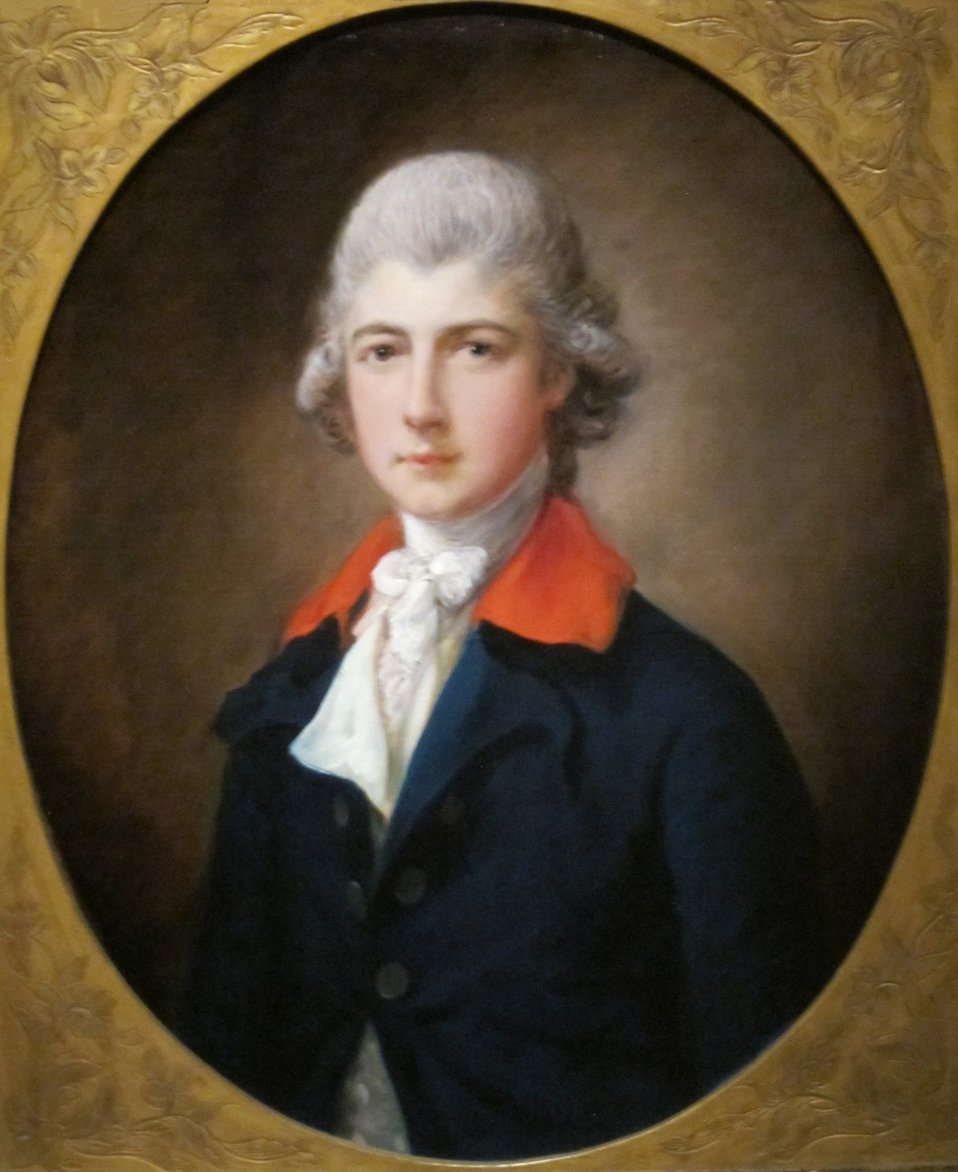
'John, 5th Viscount Downe' by Thomas Gainsborough, Cincinnati Art Museum